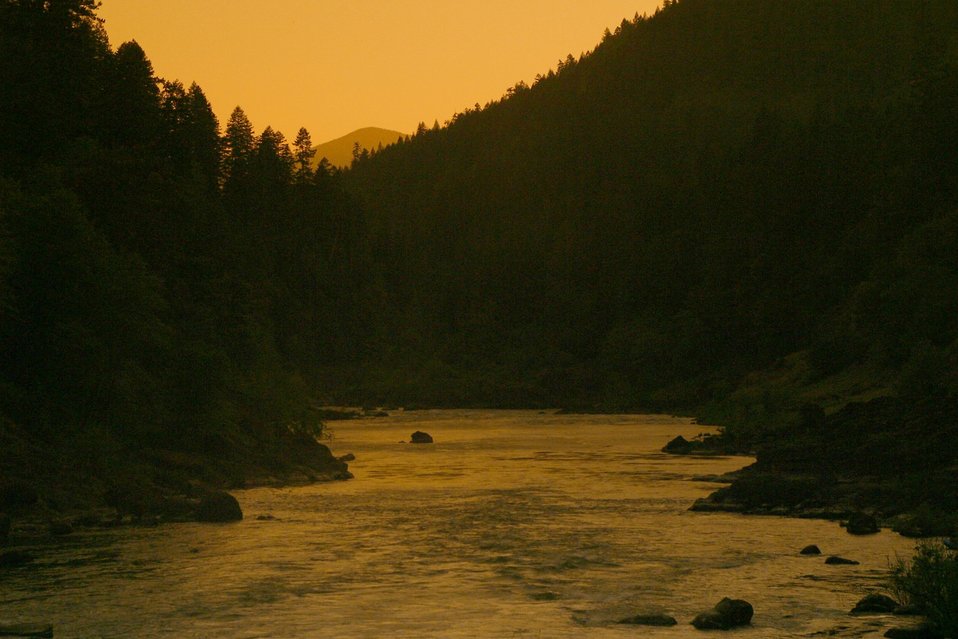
Wild section of the Rogue River from Grave Creek to Foster Bar May 19 to May 22.